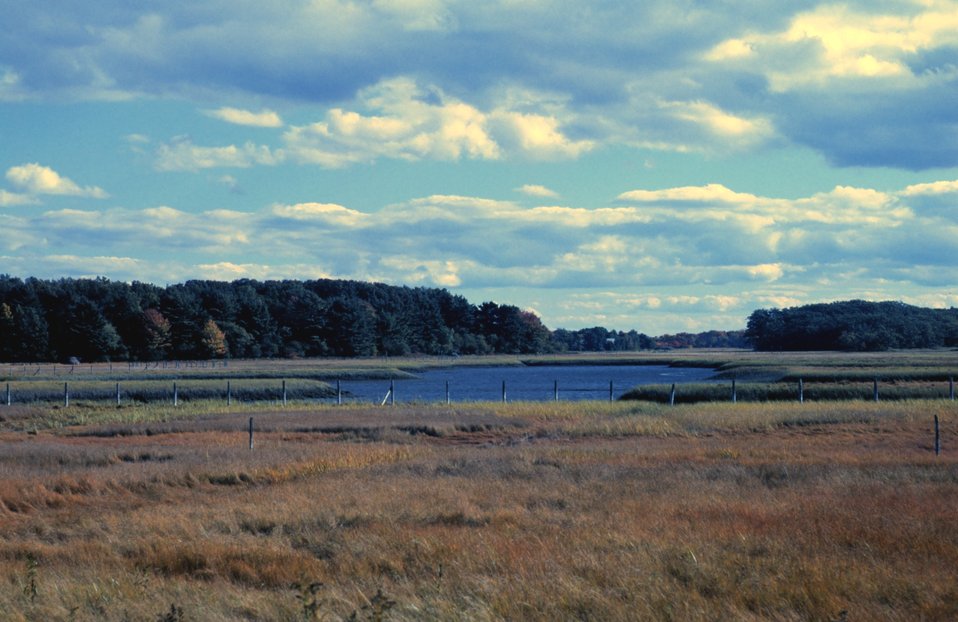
A view of wetlands at Great Bay National Estuarine Research Reserve.